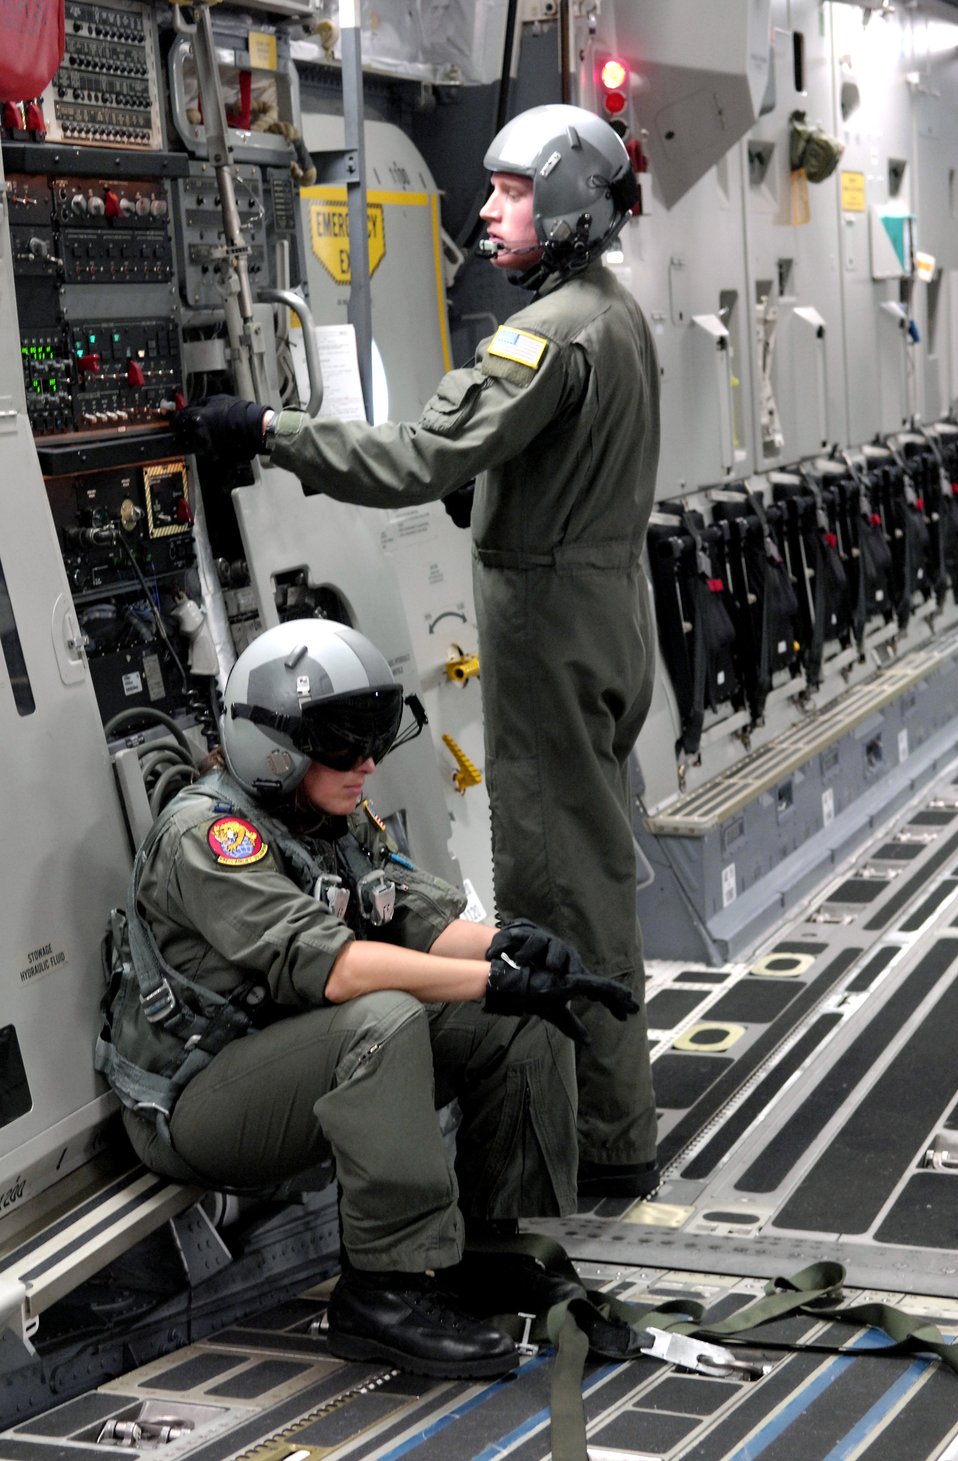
Airlift training

Capt. Stephanie Boff and Tech. Sgt. Ansen Lucas wait for their C-17 Globemaster III to get into position for an airdrop July 16 during a training mission over Hawaii. The Airmen are with the 535th Airlift Squadron at Hickam Air Force Base, Hawaii.